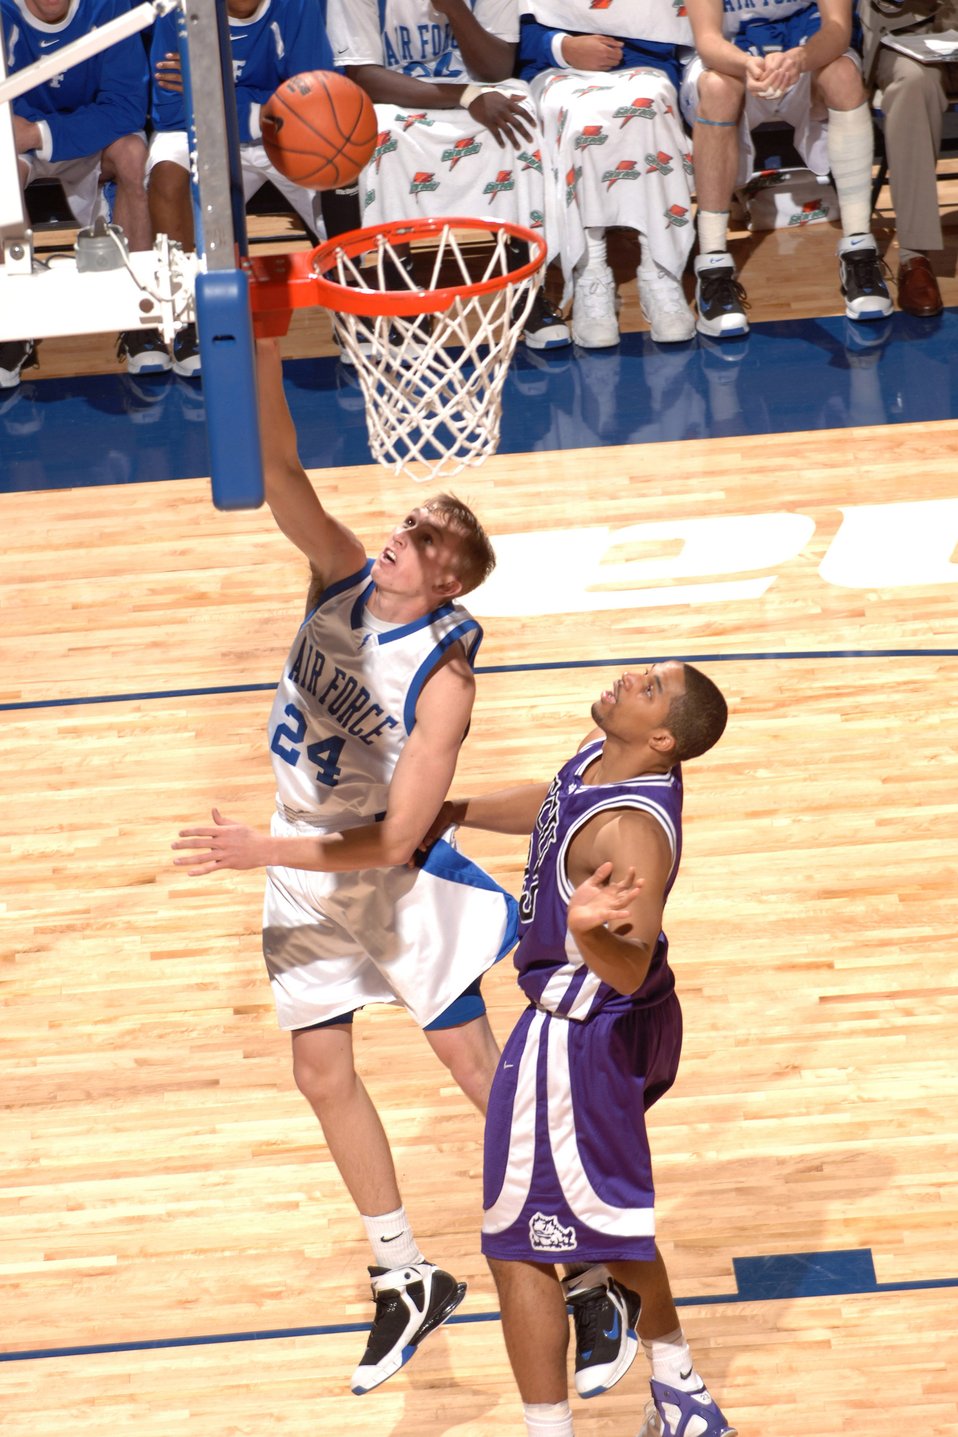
Falcons to play NCAA

U.S. Air Force Academy forward Ryan Teets (24) lays up two points against Texas Christian University on Jan. 14. The Falcon’s are the No. 13 seed in the 2006 NCAA Tournament and will be playing fourth-seed Illinois at Cox Arena in San Diego, Calif., Thursday, Mar. 16.